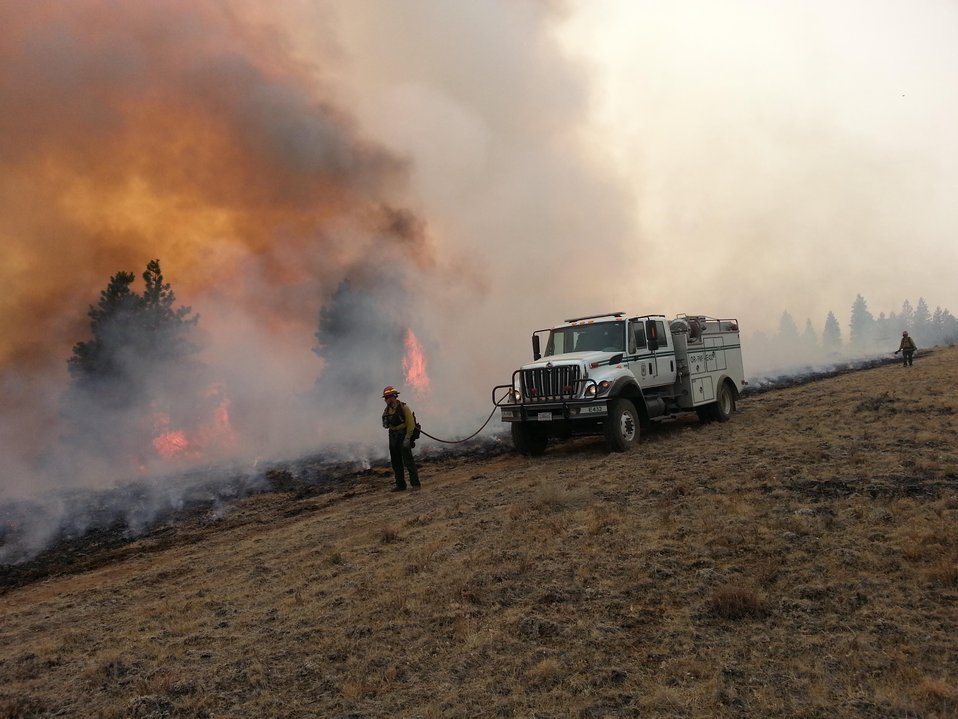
Fire crew with engine patrolling the fire line at the Mile Marker 28 Fire. The Mile Marker 28 Fire near Goldendale, WA began on Jul. 24, 2013 is under investigation and has consumed approximately 20,337 acres. The fire is approximately 25% contained.